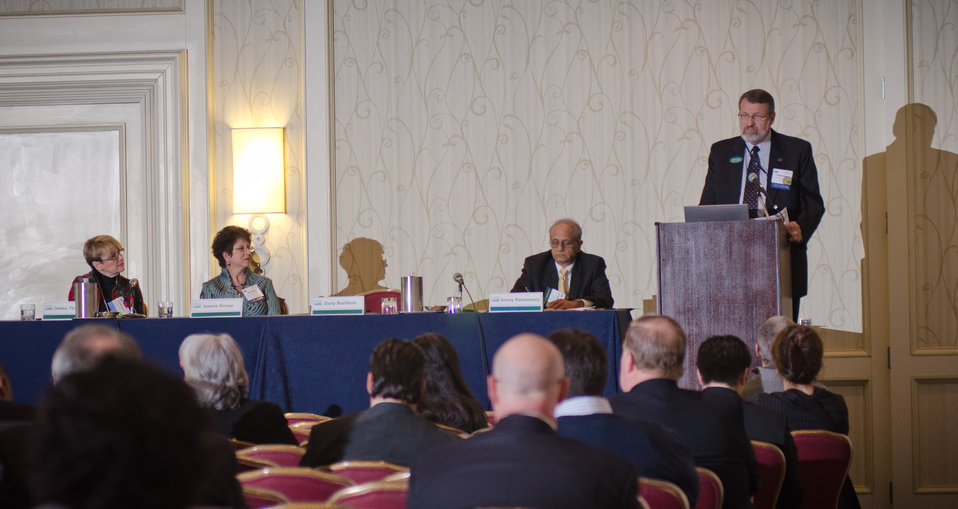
2013 Agricultural Outlook Forum, held at the Crystal Gateway Marriott Hotel, Arlington, Virginia on Thursday, Feb. 21, 2013. This annual Forum brings together producers, policymakers, government, and industry leaders to meet, exchange ideas, and discuss timely agriculture issues.